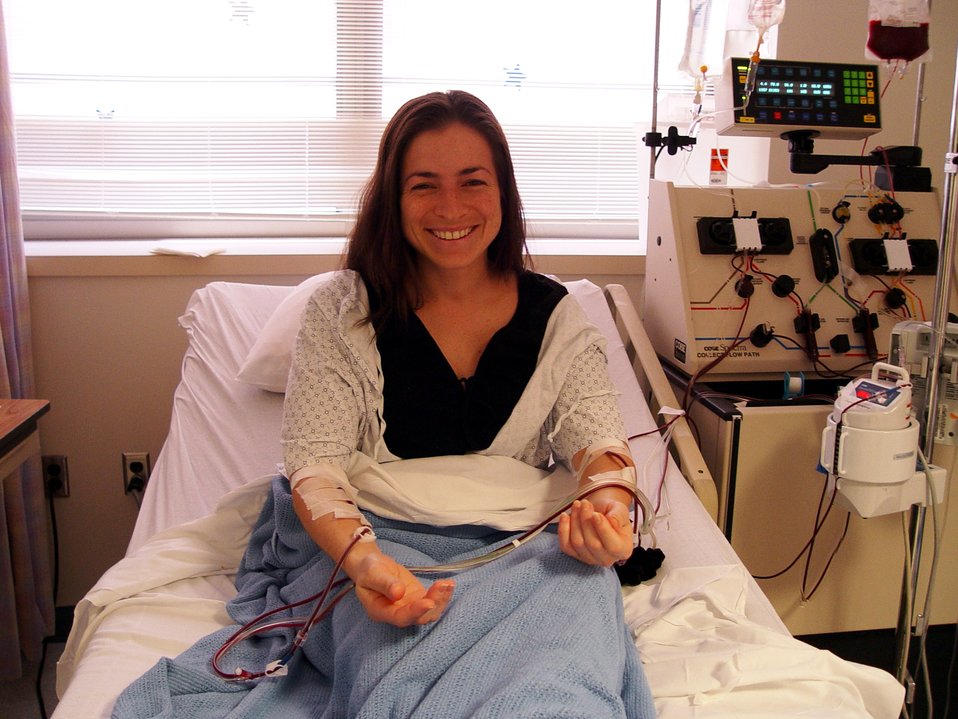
Technical sergeant in business of saving a life ... twice

Tech. Sgt. Mari Navarro donates her blood stem cells back in 2004. On Nov. 8, in Washington D.C., Sergeant Navarro donated again to the same woman she first helped; hopefully, giving the recipient a third chance at life. Sergeant Navarro is the NCO in charge of military personnel field activities for the manpower, personnel and services directorate at Air Force Space Command, Peterson Air Force Base, Colo.